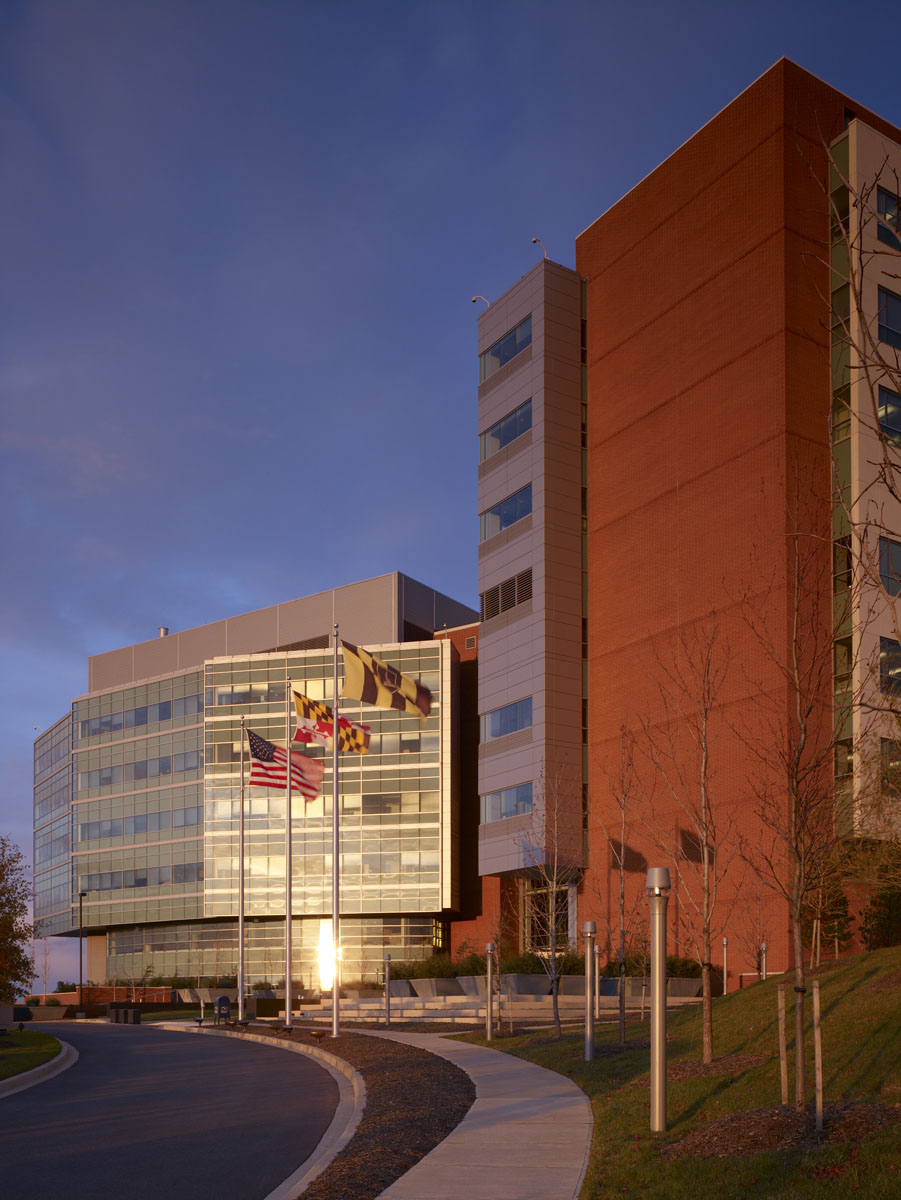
IRP exterior